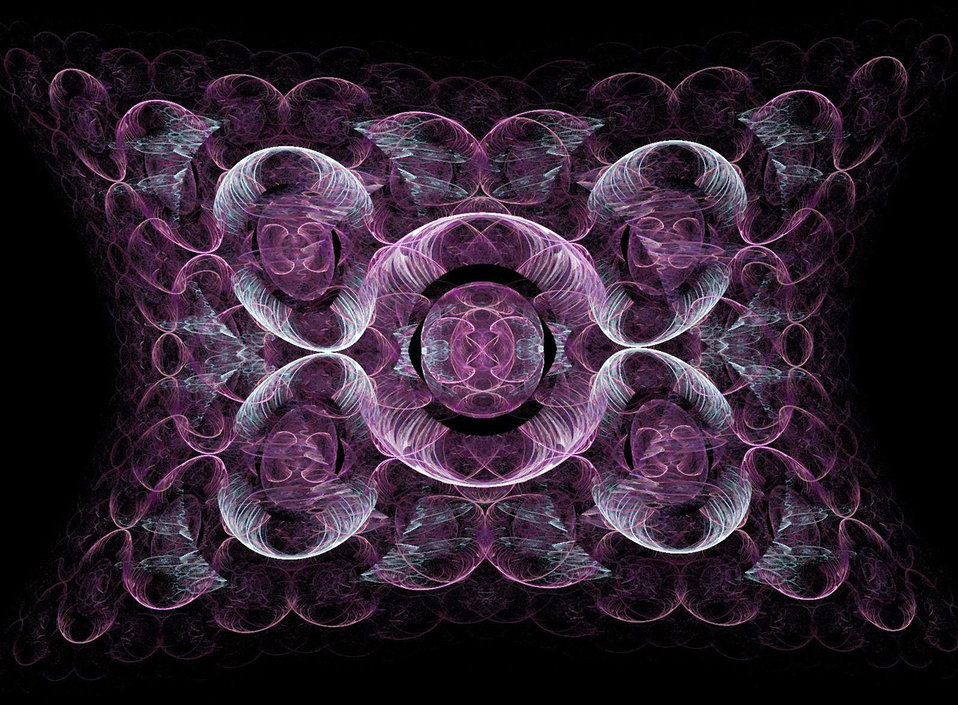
Swirls

Fractal in lovely swirls of purple and blue.